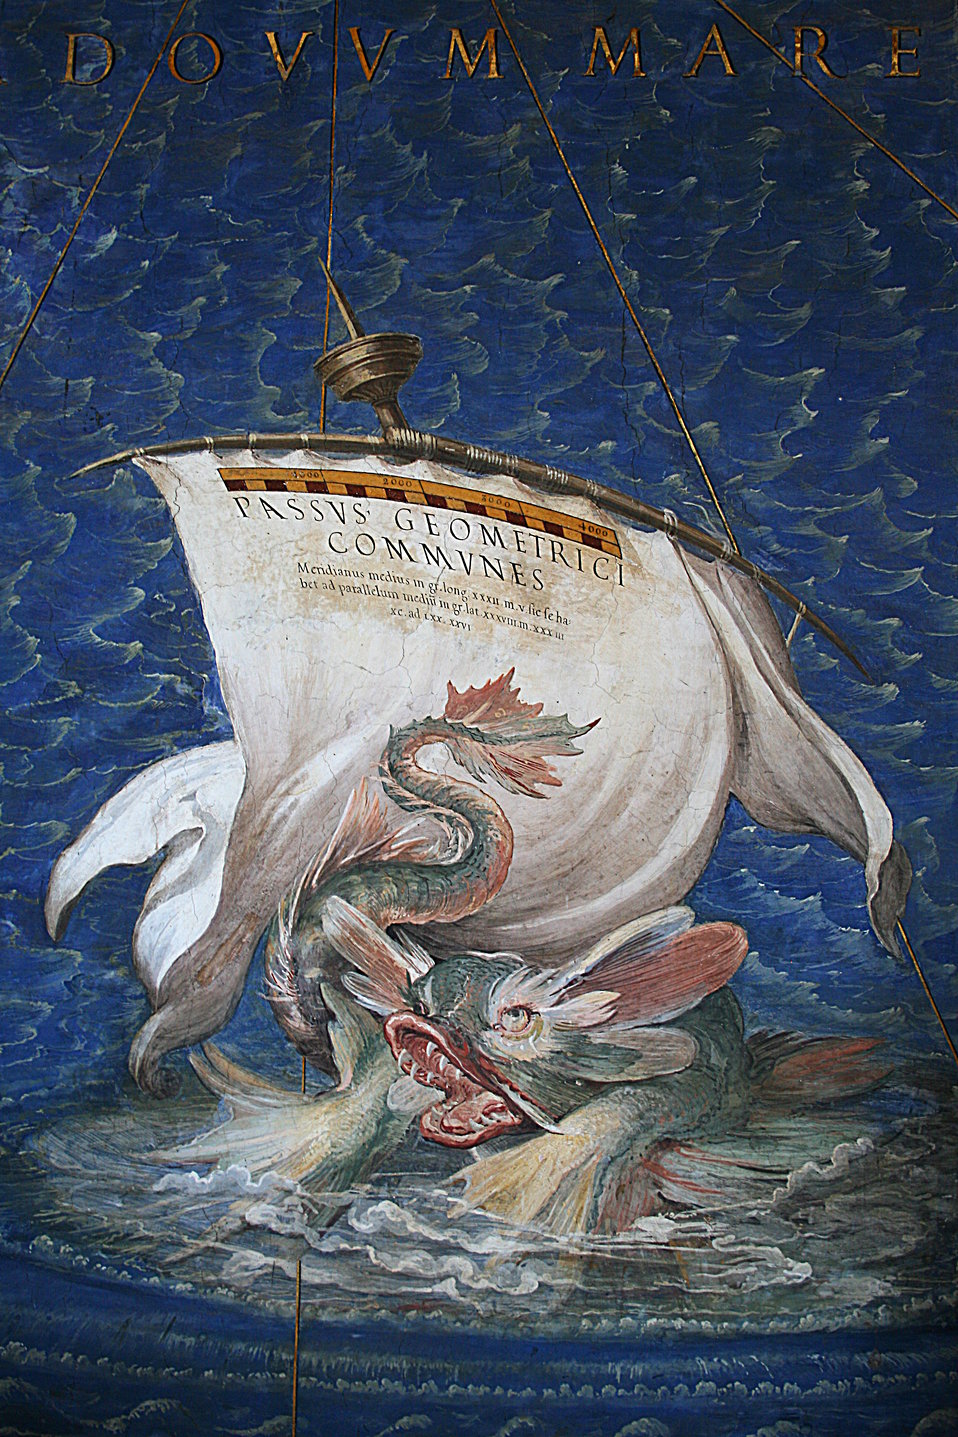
0 Détail d'une carte d'Ignazio Danti - Galleria delle carte geografiche